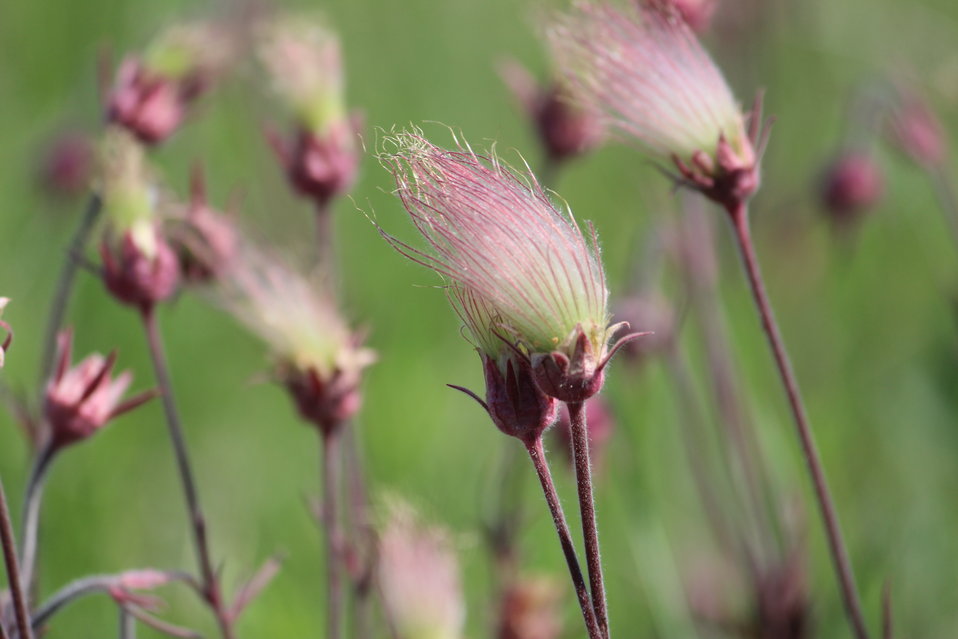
Prairie Smoke is a perennial native wildflower found on high-quality native prairie sites. After pollination, the down-turned flower becomes upright and seeds wave the feathery plumes that give this plant it's common name.
These beautiful flowers were photographed on the Cornell WPA in LaMoure County, North Dakota.